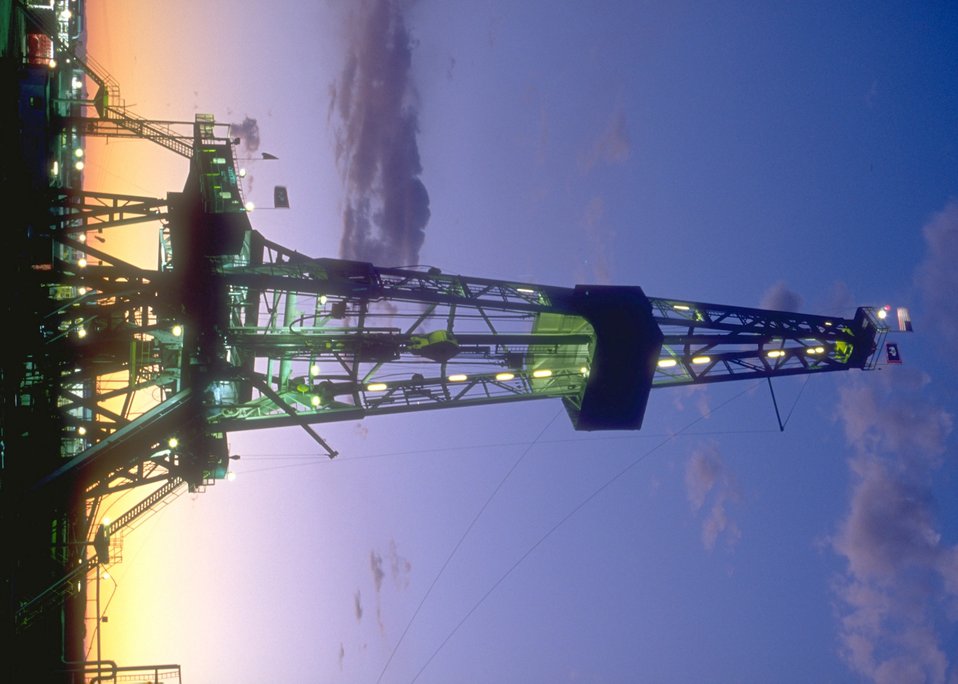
Burlington Northern deep well rig, Casper Field Office.